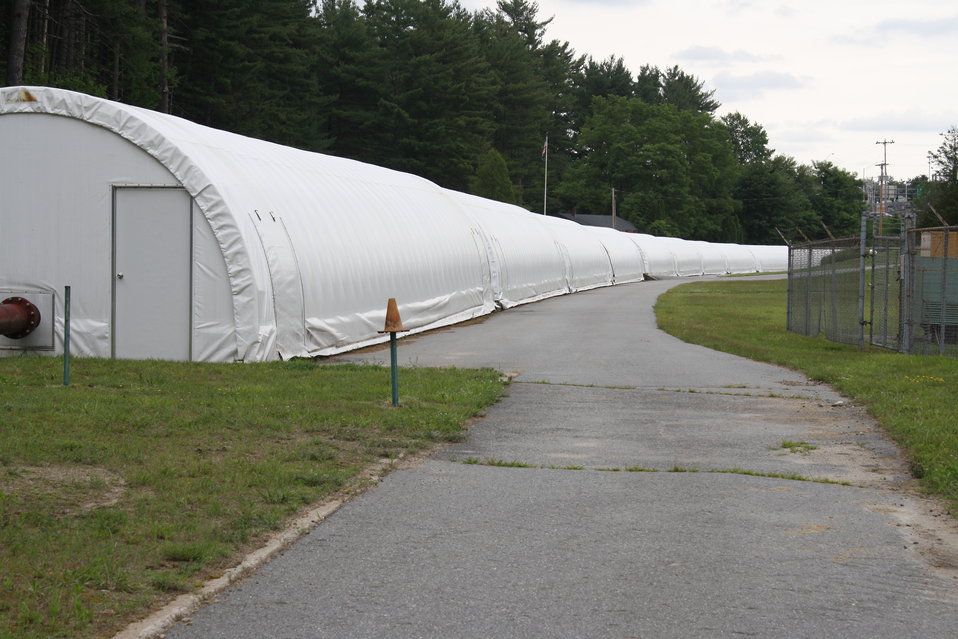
Nashua National Fish Hatchery welcomes regional office employees

Salmon raceways